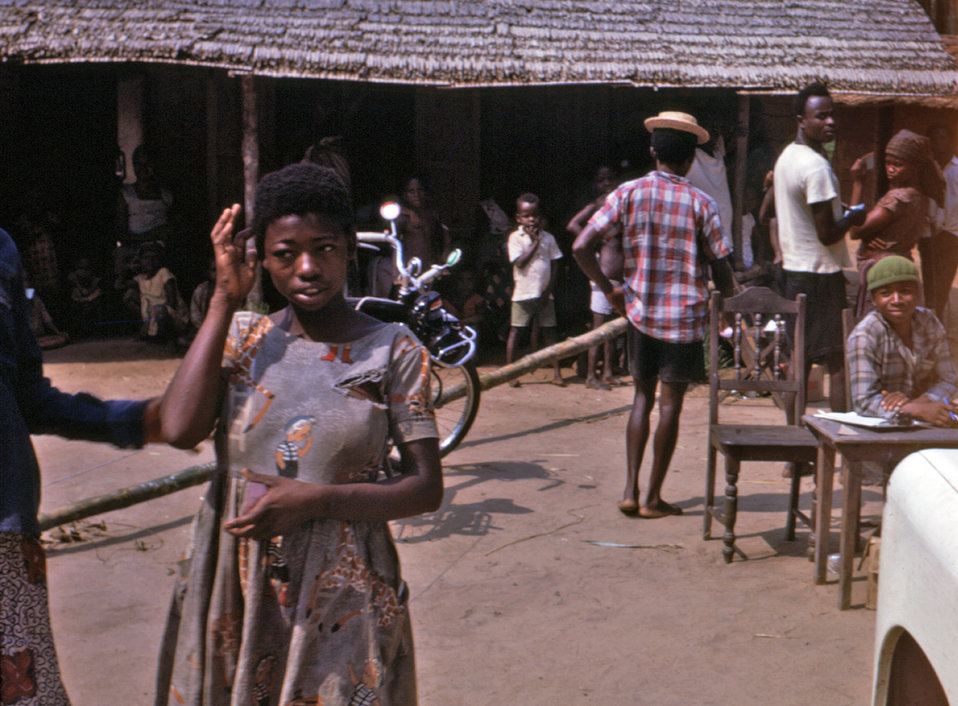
This 1968 photograph was taken at a refugee relief camp that was set up during the Nigerian-Biafran war. Due to a limited food supply, children were examined at a table set up at the right side of this image, in order to determine which children needed additional food.